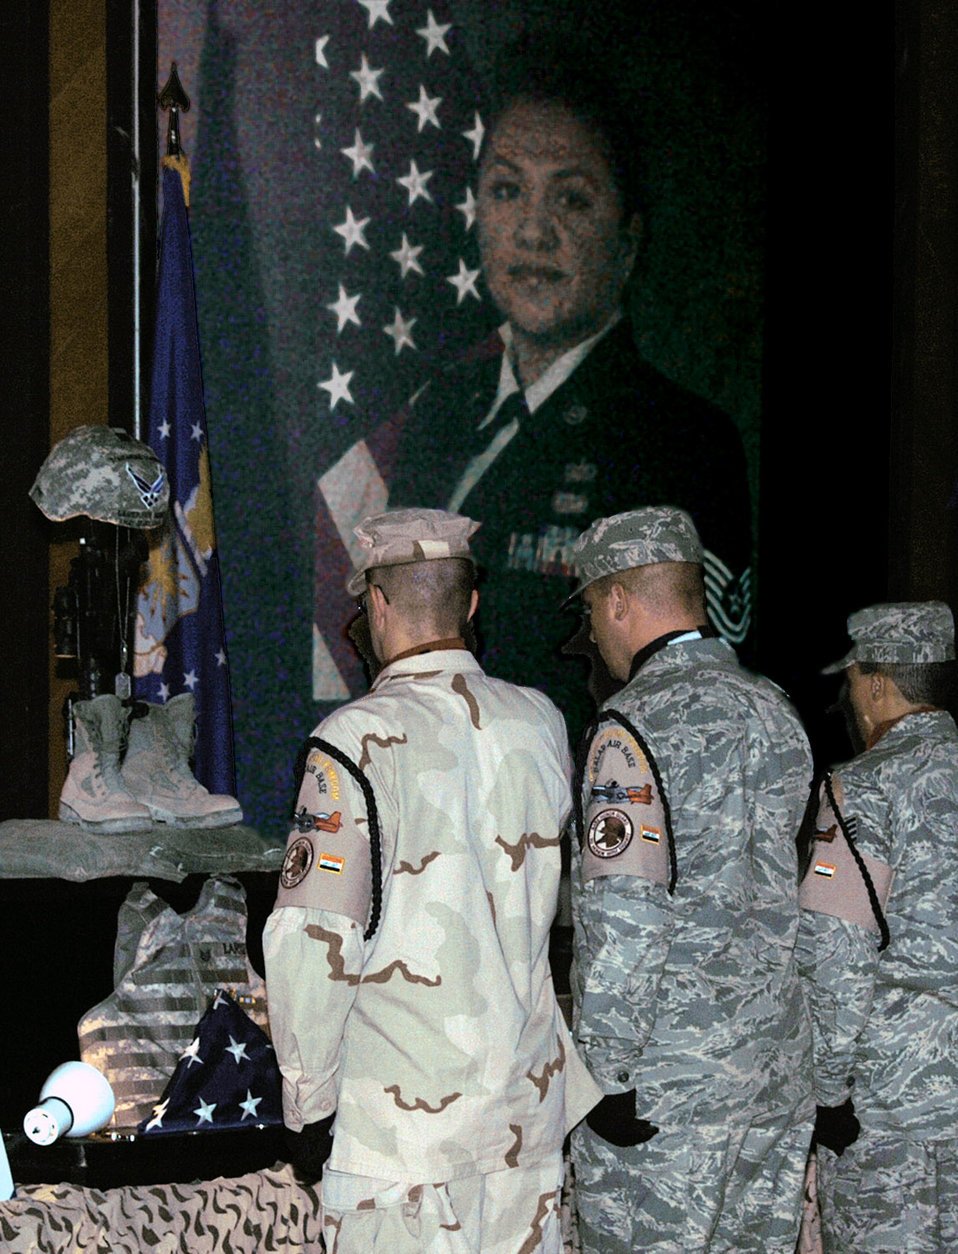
Servicemembers mourn loss of one of their own

Airmen with the Joint Base Balad Honor Guard take part in a memorial service for Tech. Sgt. Jackie Larsen at the Joint Base Balad Town Hall July 20 in Iraq. Sergeant Larsen, who died from non-combat related causes July 17, was a paralegal working with the Law and Order Task Force of the 732nd Expeditionary Support Squadron. Her duties placed her at Forward Operating Base Shield where she served as the NCO in charge of all personnel movements for the LAOTF. She was deployed from Beale Air Force Base, Calif. and her hometown was Tacoma, Wash.